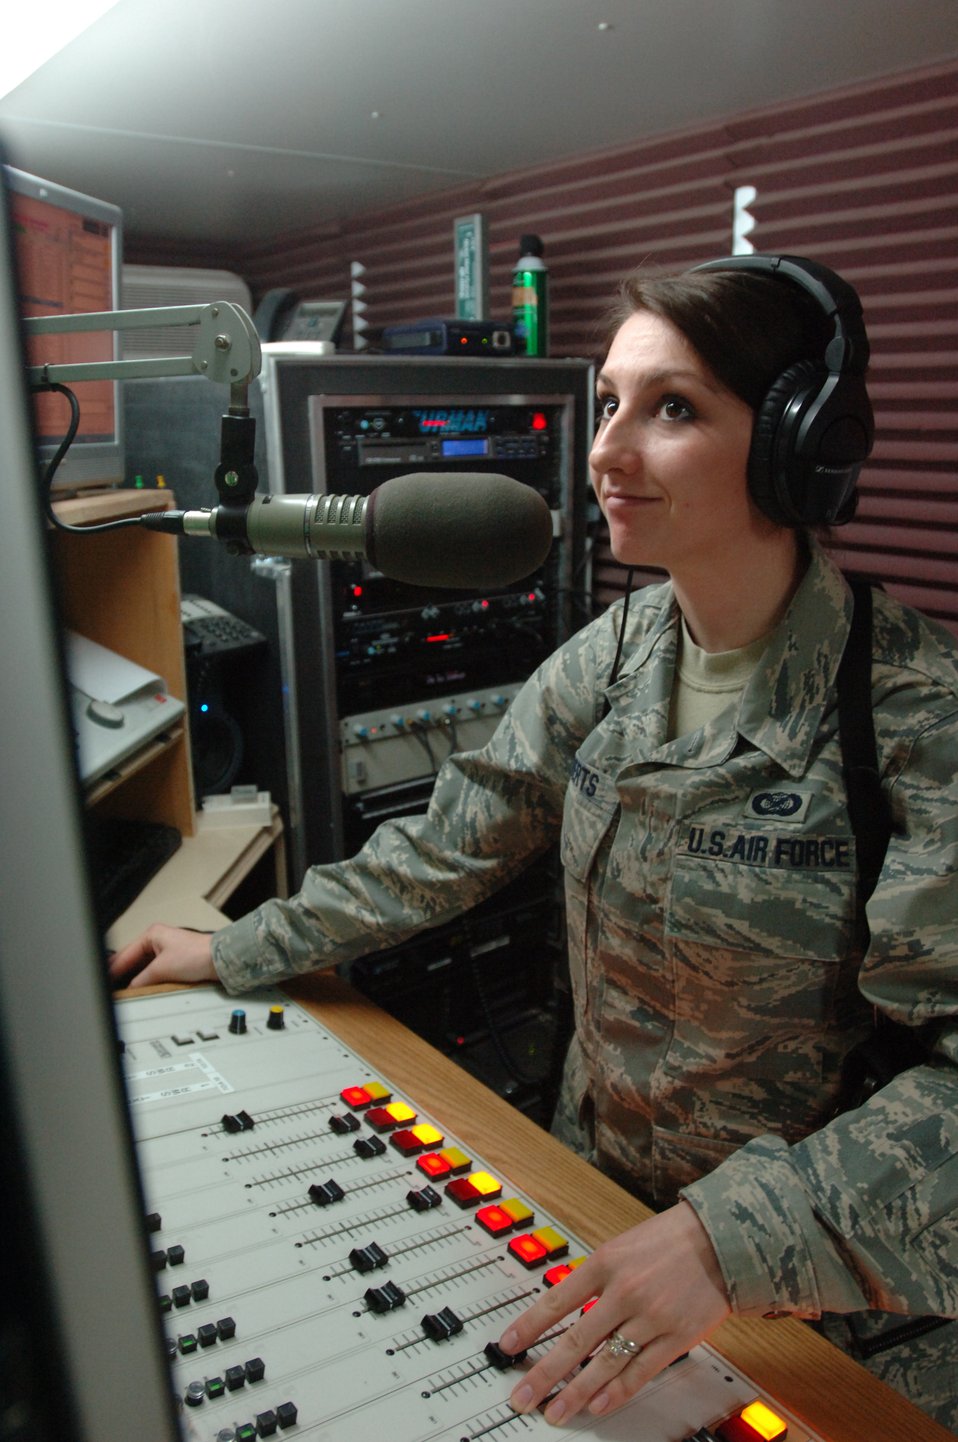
AFN-Iraq

Senior Airman Holly Roberts, a broadcaster with the 732nd Expeditionary Support Squadron's American Forces Network-Iraq, runs the switchboard during her radio broadcast March 4 in Baghdad. Airman Roberts is deployed from Spangdahlem Air Base, Germany.